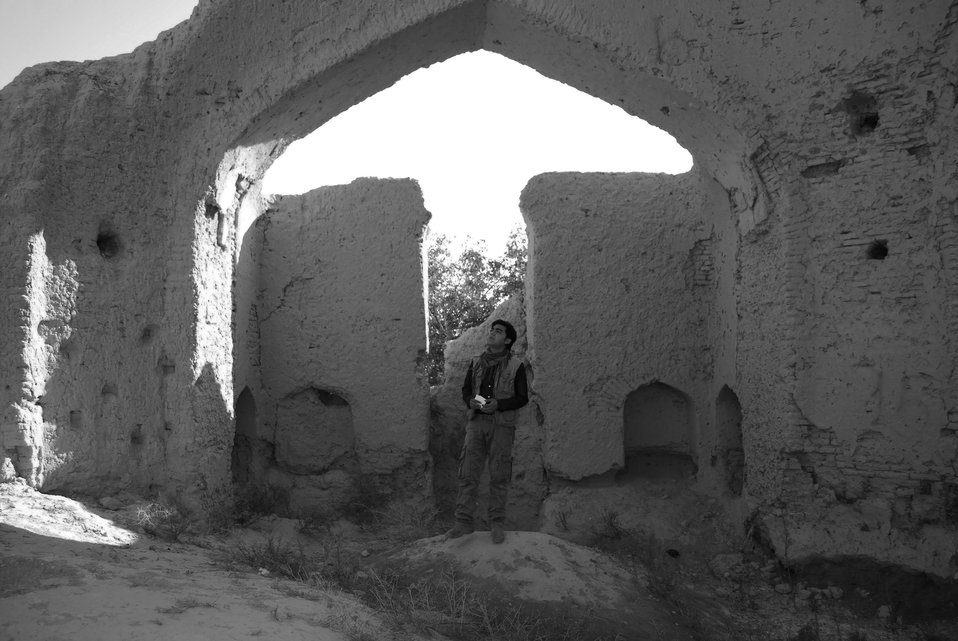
'On the Road' in Balkh Province